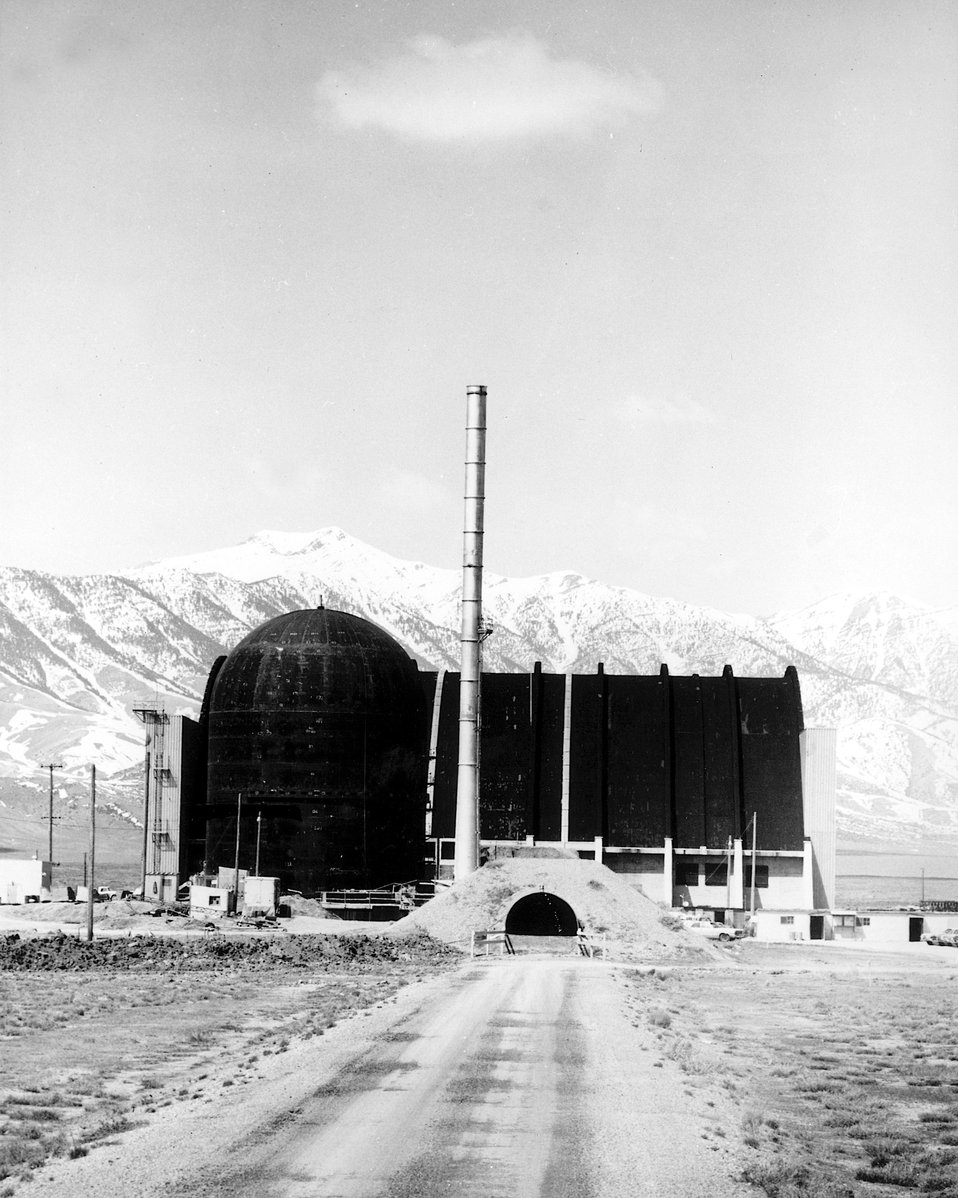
Loss of Fluid Test containment shell and stack under construction at the U.S. Atomic Energy Commission's National Reactor Testing Station in Idaho in 1969. Circa 1974.